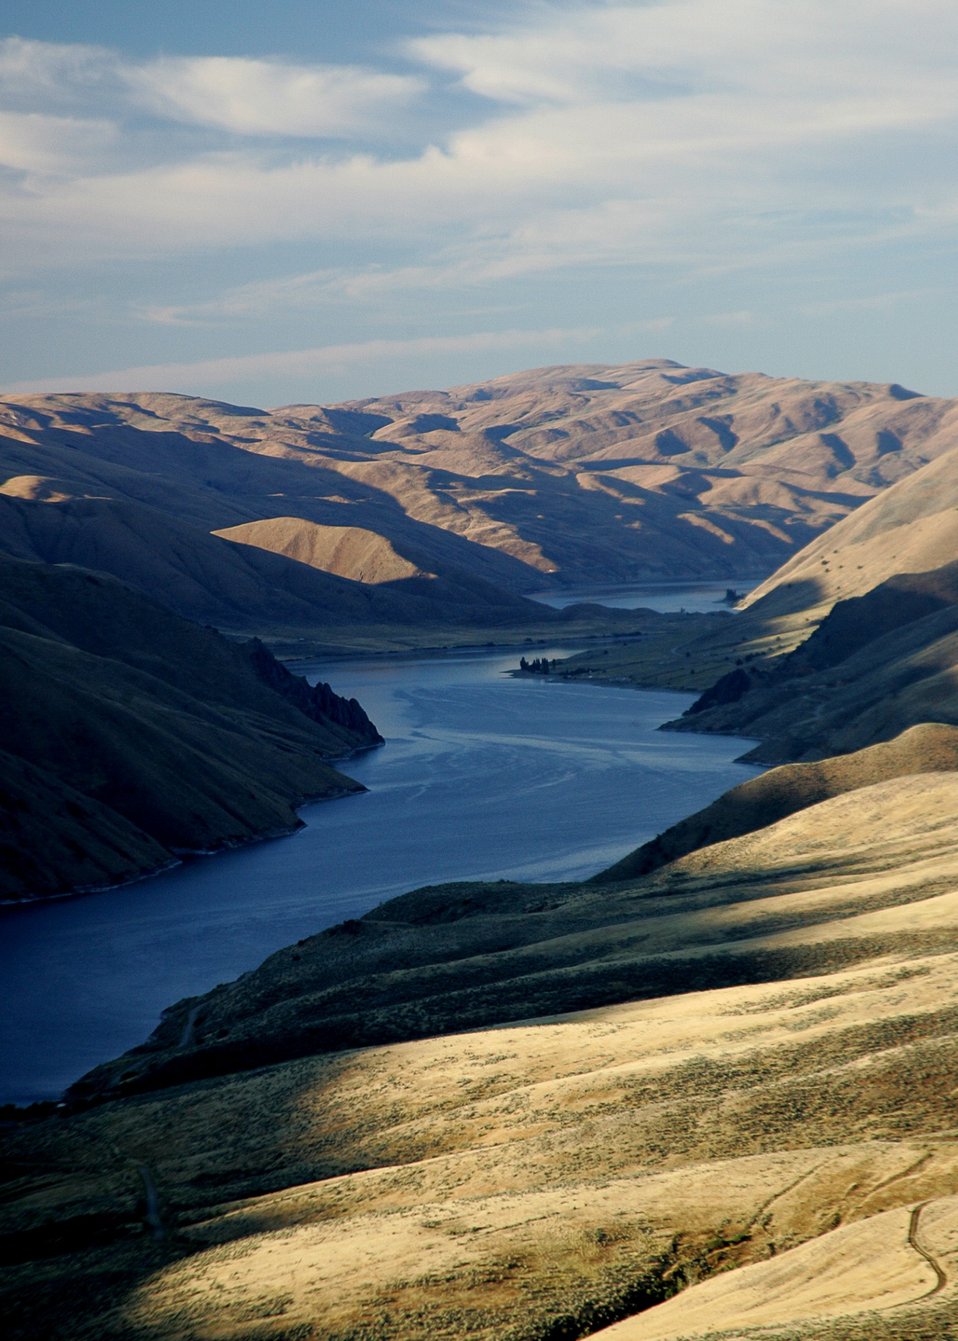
Sunrise on the Snake River Backcountry Byway.